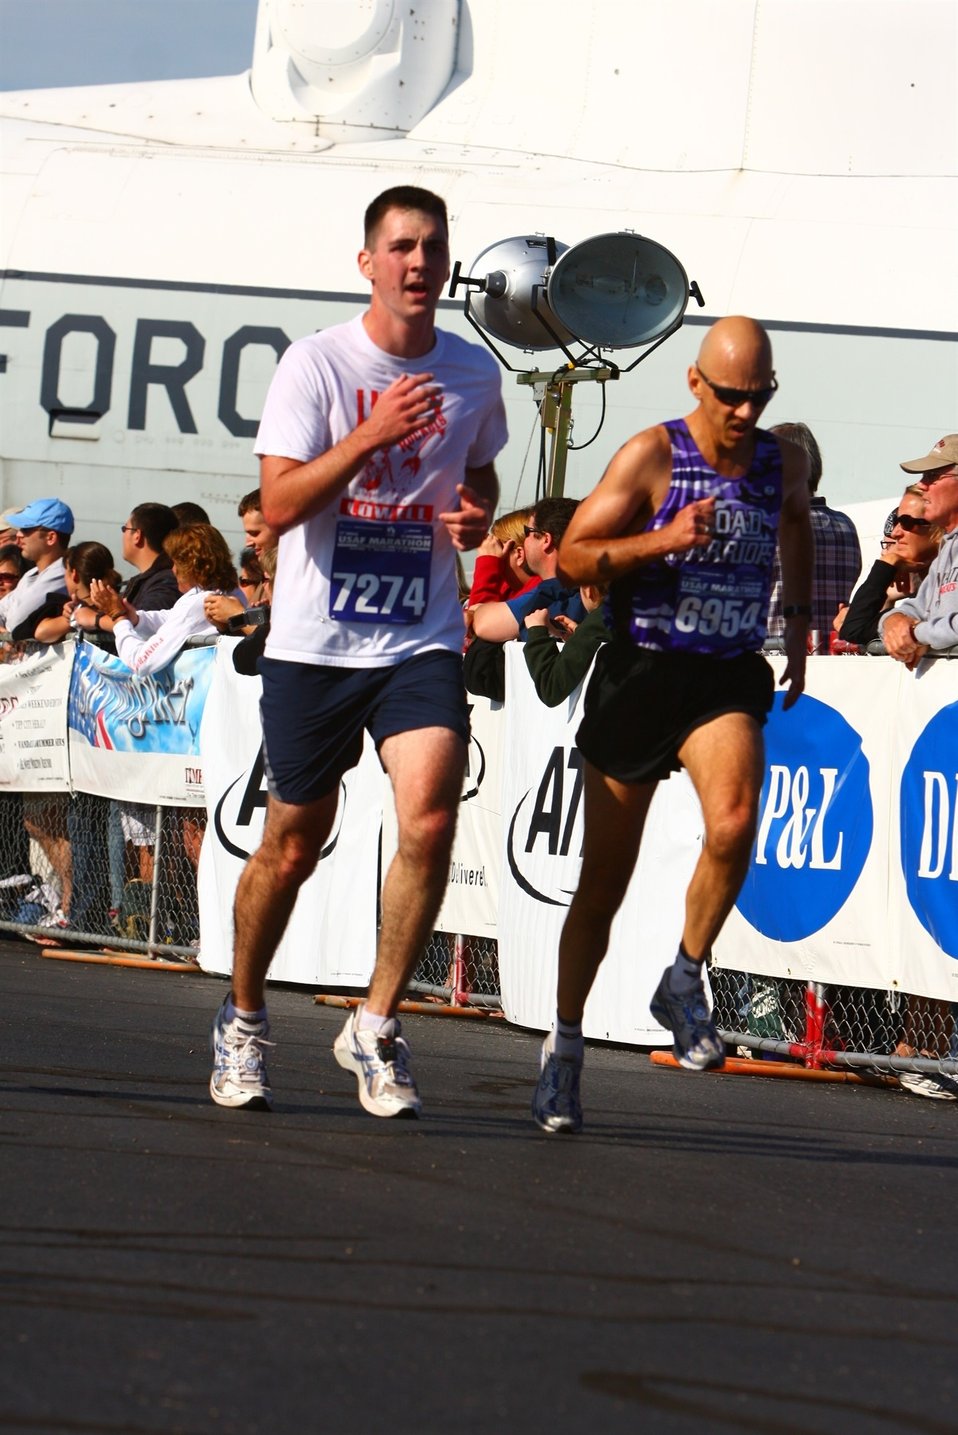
Wingman helps cancer survivor meet Air Force Half Marathon goal

2nd Lt. Evan McNichols (left) and Master Sgt. Mike Sanders run for the finish line during the Air Force Half Marathon Sept. 19, 2009, at Wright-Patterson Air Force Base, Ohio. Sergeant Sanders ran the event one year and eight months after beating cancer. Sergeant Sanders had served as an instructor with the University of Oregon's Air Force ROTC program, and Lieutenant McNichols was a cadet there and they have been each other's wingman since.